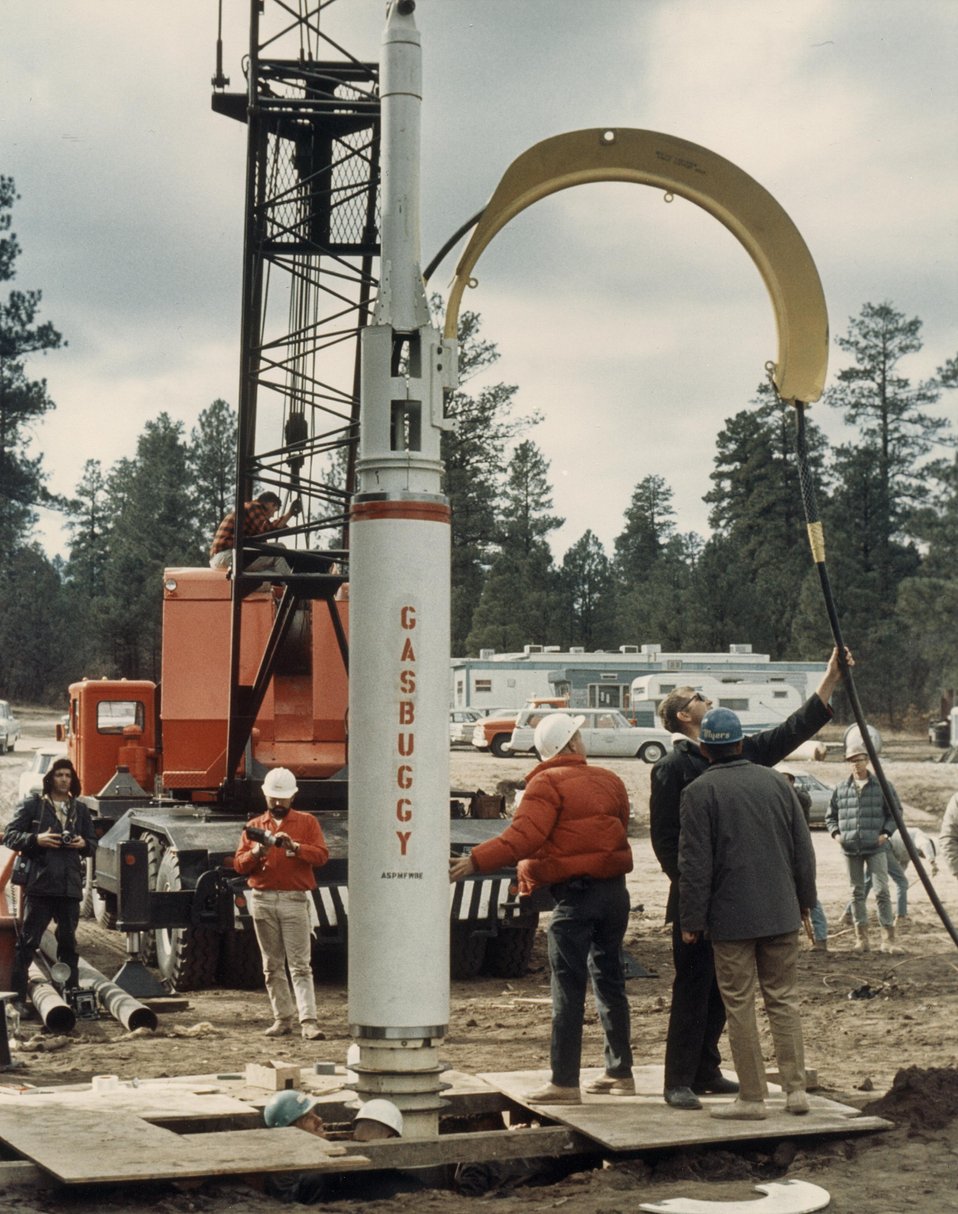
The nation's first joint Government-industry experiment under the AEC's Plowshare Program, to investigate the feasibility of using nuclear explosions to exploit natural resources. The explosive was detonated in a New Mexico natural gas-bearing formation to create a rubble-filled cavity from which, it is expected, the gas can be withdrawn at a much increased production rate. The Gasbuggy site is some 55 miles east of Farmington, New Mexico. Circa 1967.